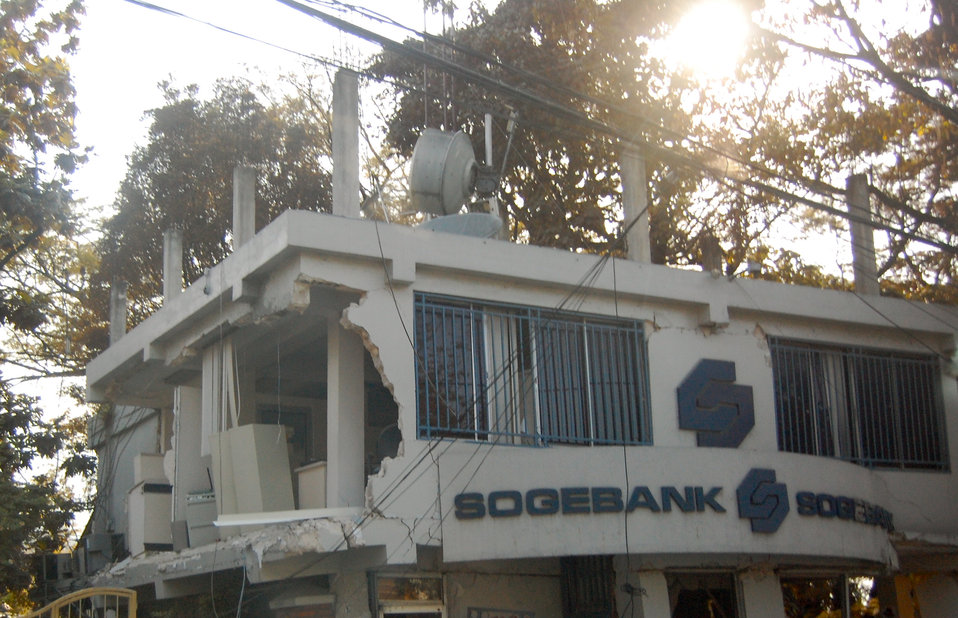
Haiti, One Year Later

Many of Haiti’s financial institutions were damaged in the earthquake. In the immediate aftermath, Treasury acted quickly to deploy senior representatives on the ground and will send a permanent financial attaché to work on a variety of issues.